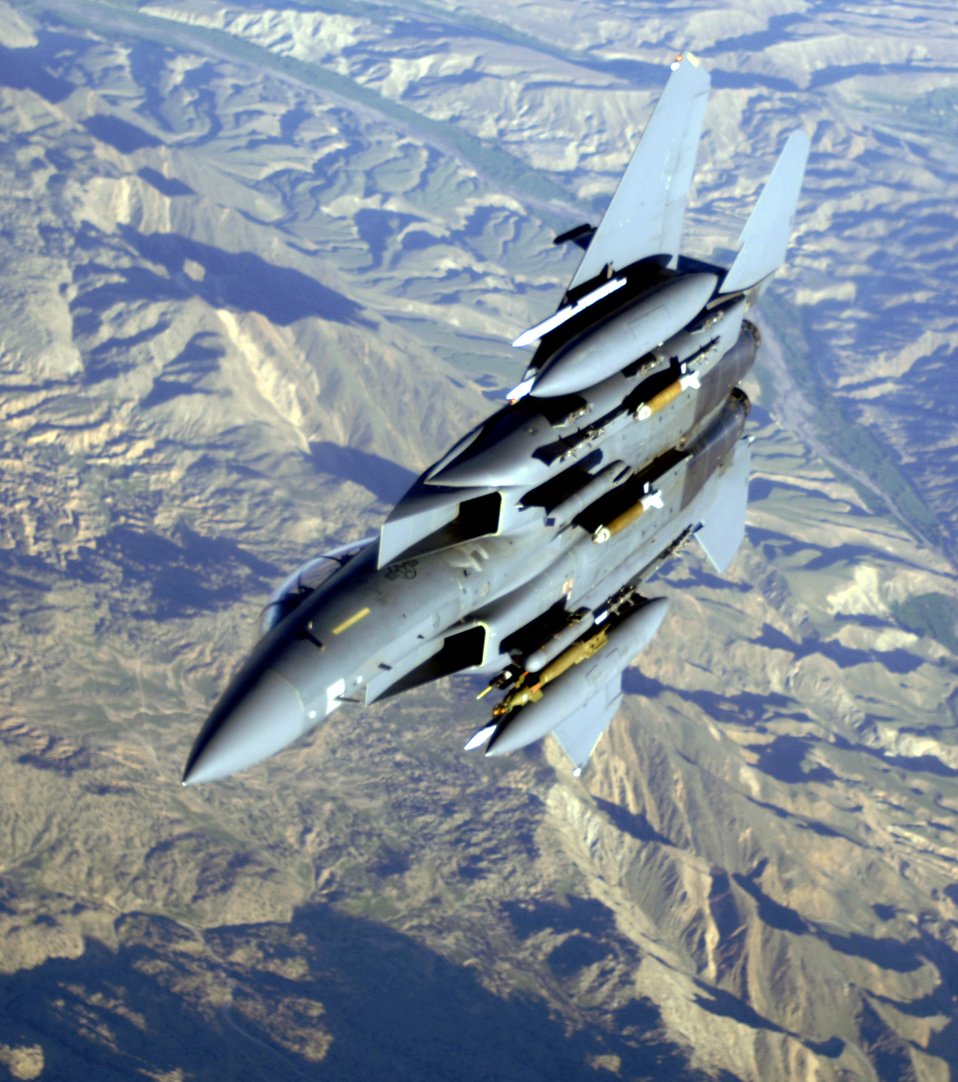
Operation Mountain Lion roars

An F-15E Strike Eagle soars over the mountains of Afghanistan in support of Operation Mountain Lion on Wednesday, April 12, 2006. The crew and fighter are deployed to the 336th Expeditionary Fighter Squadron in Southwest Asia from the 4th Fighter Wing at Seymour Johnson Air Force Base, N.C.